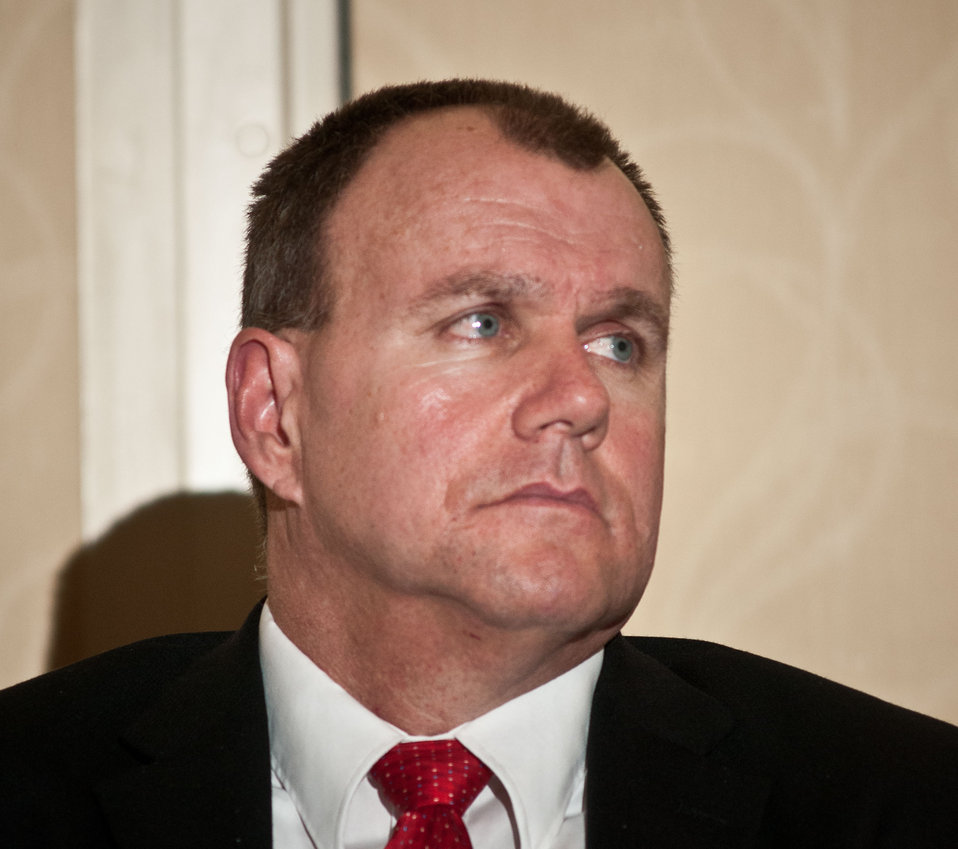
The U.S. Department of Agriculture (USDA) National Agricultural Statistics Service (NASS), Spatial Analysis Research Section Head Rick Mueller, presented VegScape: A NASS Web Service-based U.S. Crop Condition Monitoring System, during the 2013 Agricultural Outlook Forum was held at the Crystal Gateway Marriott Hotel in Arlington, VA on Friday, Feb. 22, 2013. The system is a new vegetation condition portal called VegScape, which delivers Web-service based interactive vegetation indices that enable quantification of U.S. crop conditions for exploring, visualizing, querying, and disseminating via interactive maps. Vegetation indices like NDVI (Normalized Difference Vegetation Index), and mean, median, and ratio comparisons to prior years are constructed for analytical purposes and on-demand crop statistics. The breakout session generally focused on the Weather Outlook for 2013. The presentation is available at www.usda.gov/oce/forum/presentations/Mueller.pptx.